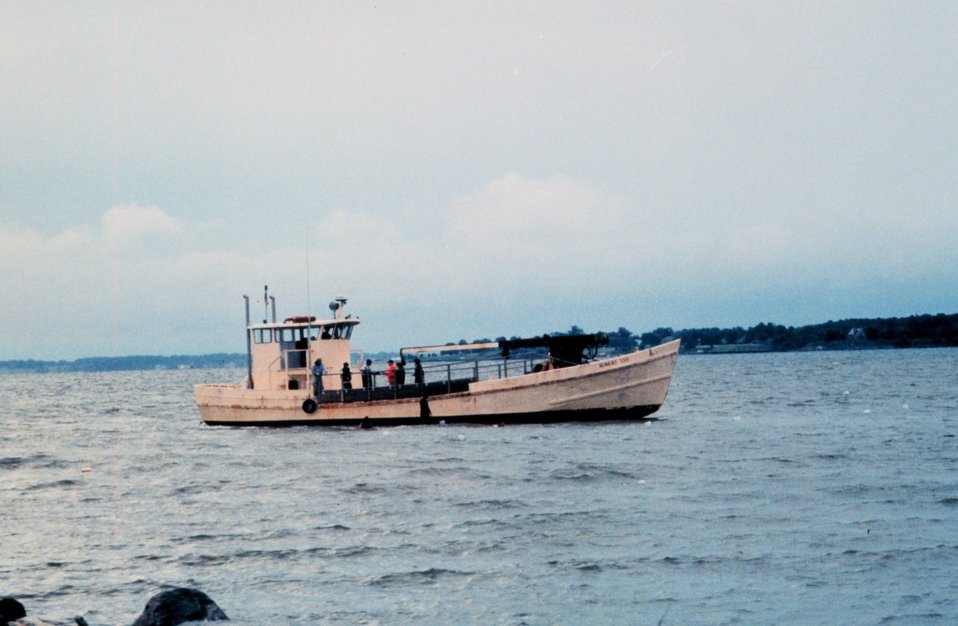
'Buy boat' ROBERT LEE off the University of Maryland Horn Point Environmental Laboratory on the Choptank River. Used by the Oyster Recovery Partnership, Partnership to transplant oyster spat to permanent oyster beds in the Chesapeake Bay.